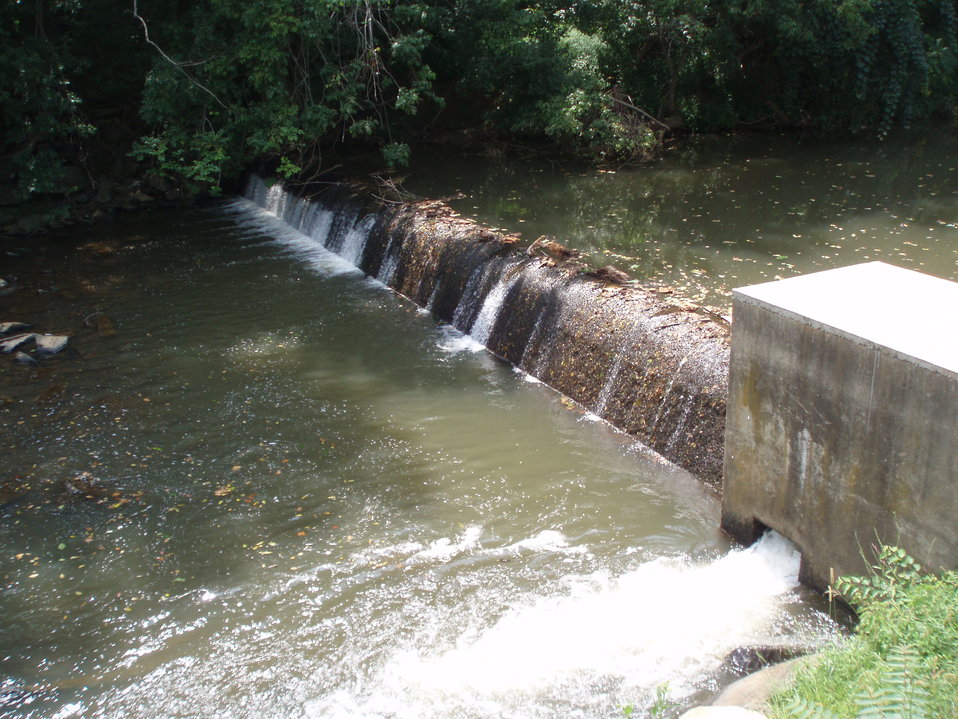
Veterans Memorial Park Dam

View of Veterans Memorial Park Dam in the Town of Rocky Mount, Franklin County, Virginia. The Virginia PFW is proposing to remove the dam to restore habitat for the federally endangered Roanoke logperch.